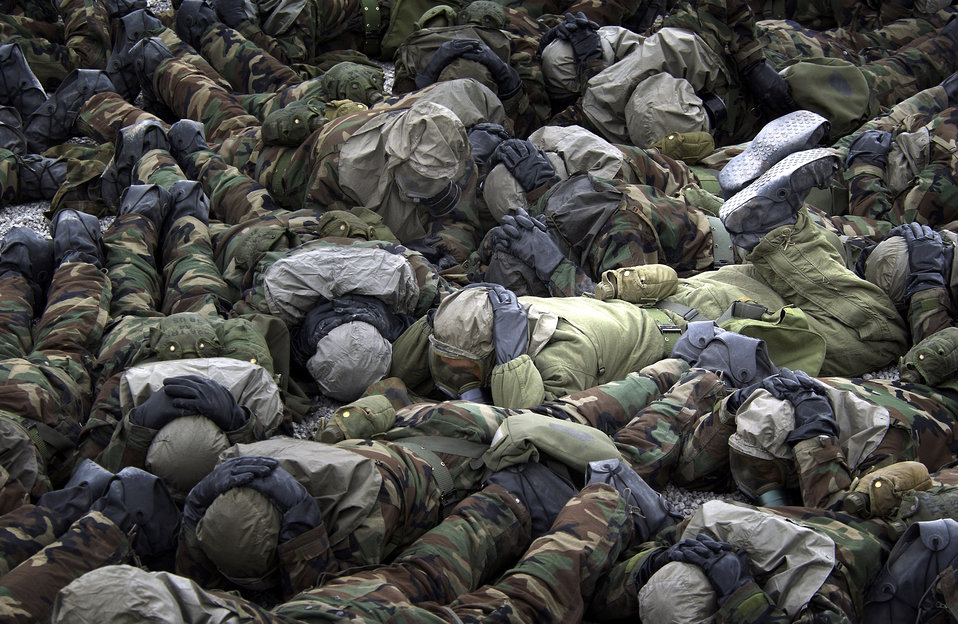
Gas, gas, gas!

LACKLAND AIR FORCE BASE, Texas -- Basic trainees practice doning chemical warfare suits prior to entering the gas chamber as part of Warrior Week training here. The training during Warrior Week prepares trainees for the possibility of world wide deployment almost immediately upon arrival at their first duty station. The trainees are in their fifth week of training and are one week away from graduation.